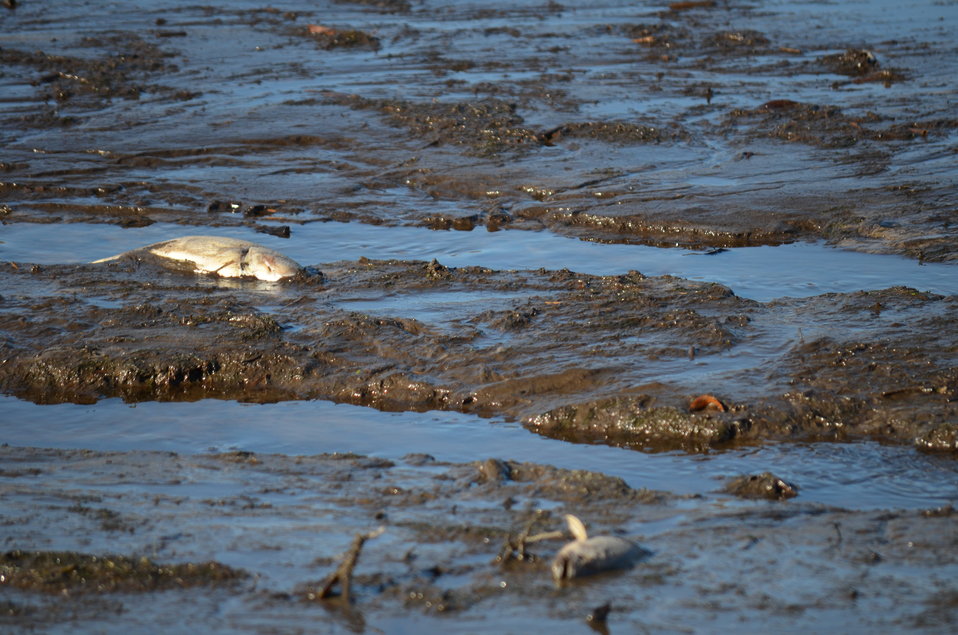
Unable to survive (RI)

Saltwater influx and decreased water levels were too much for these freshwater fish to survive at Trustom Pond National Wildlife Refuge.